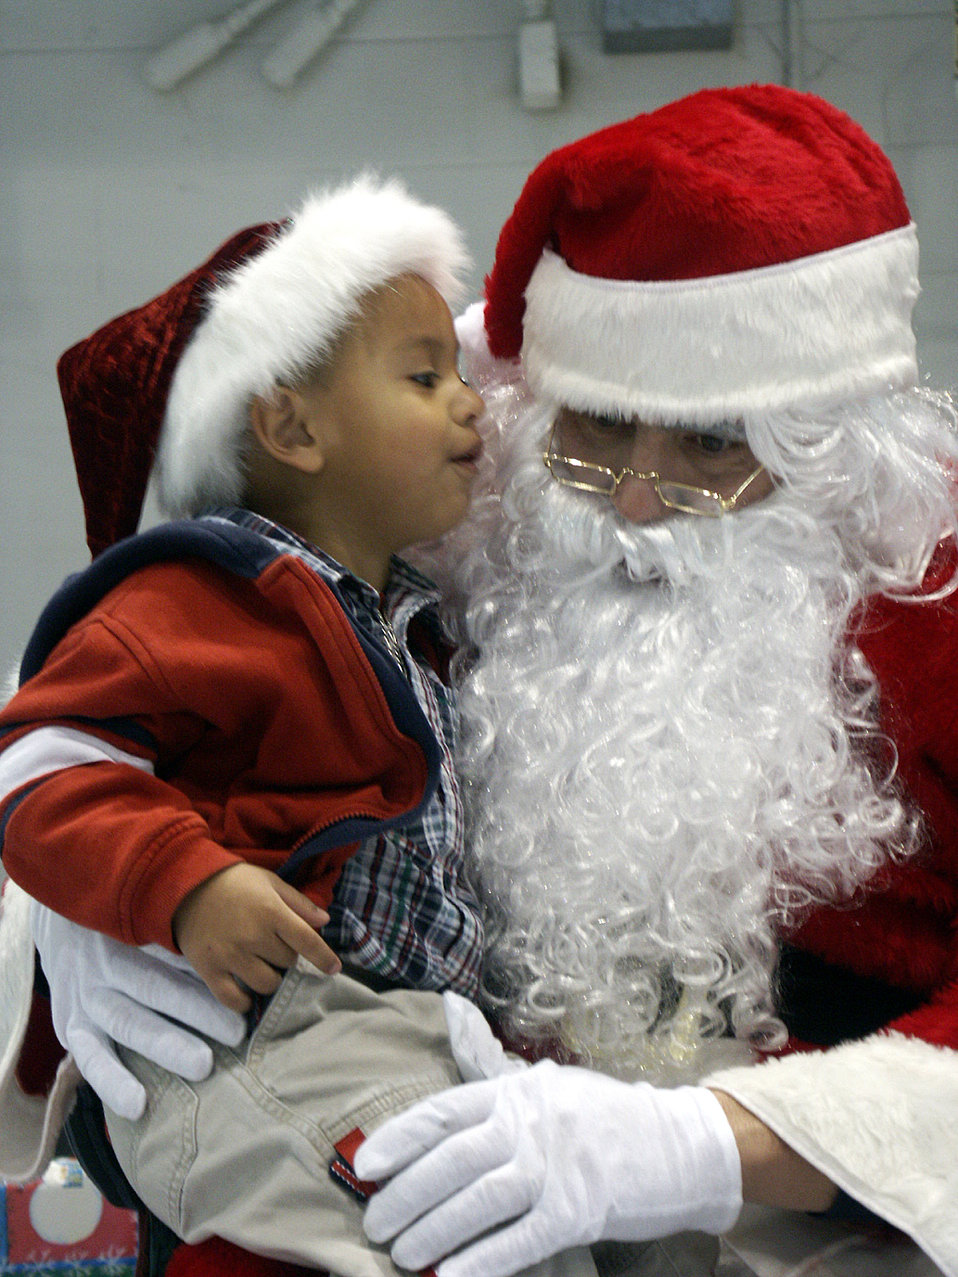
Special delivery

EGLIN AIR FORCE BASE, Fla. -- Three-year-old Ivan Martinez tells Santa what he would like to find in his stocking on Christmas morning. Children gathered here for the 33rd Fighter Wing family Christmas party Dec. 20. Ivan is the son of Airman 1st Class Oscar Martinez who is assigned to the 33rd Maintenance Squadron's ammunitions flight.